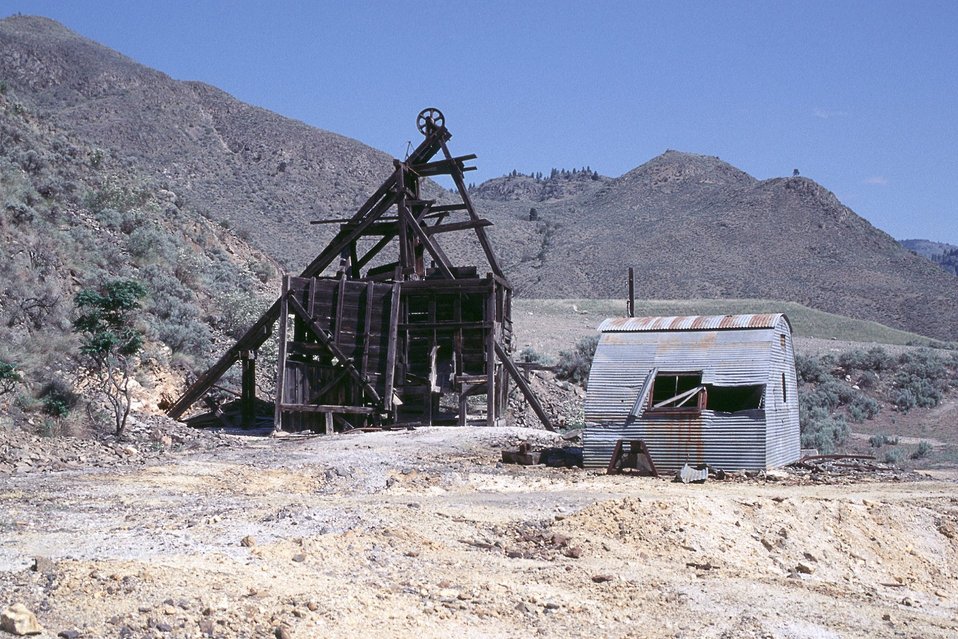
AML. Hoist at Kaaba-Texas Mine, Spokane District, Washington.